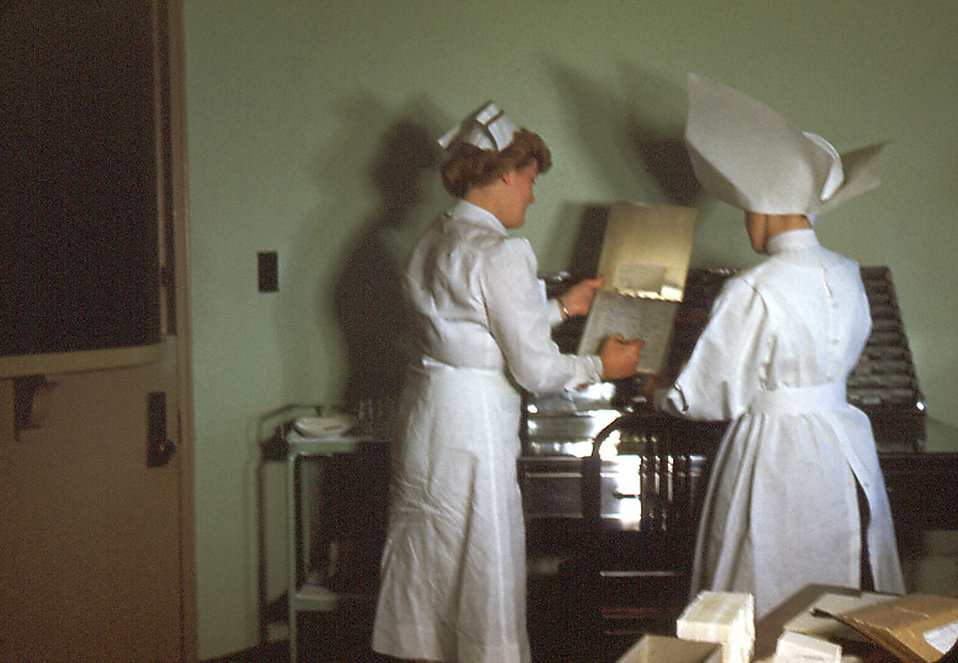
This historic image depicted two Carville, Louisiana Leprosarium staff nurses in the process of exchanging information regarding their patients inside what was called the "chart room", where every patient's records were stored, making these records very accessible to the physicians, and nurses. In this image, a Public Health Nurse, standing at left, was consulting with a Sister of Charity on matters regarding the details written in a patient's chart.